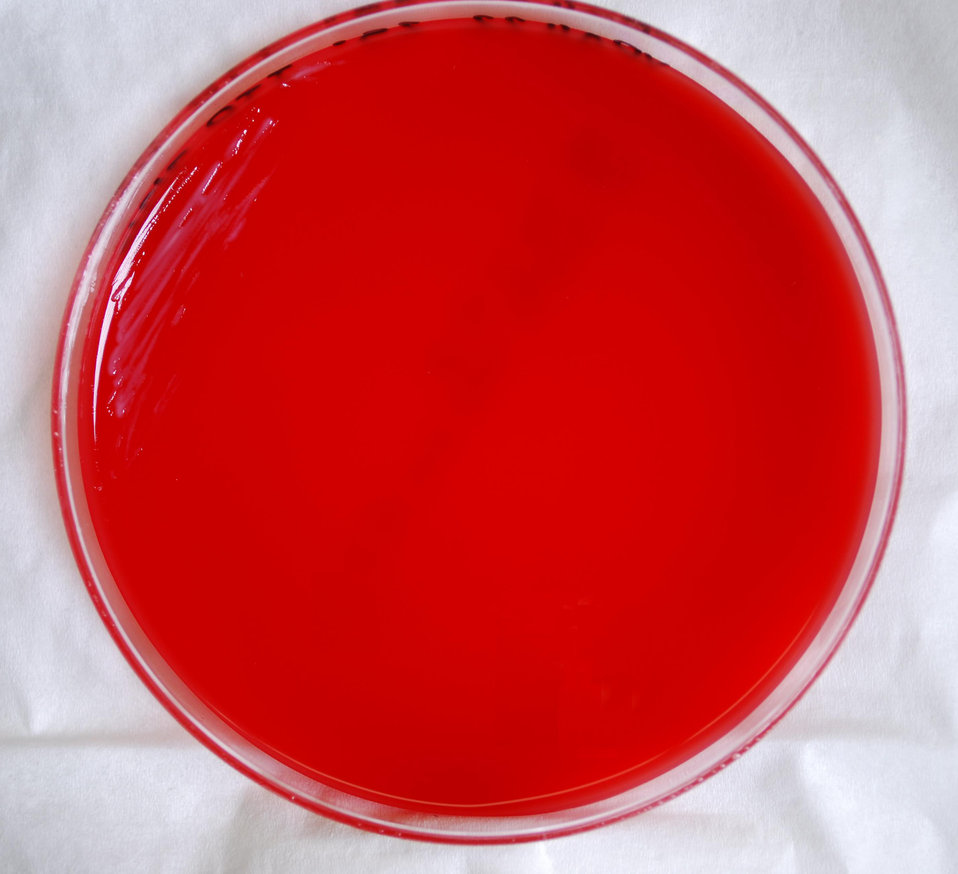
This photograph depicts the colonial morphology displayed by Gram-negative Yersinia pestis bacteria, which was grown on a medium of sheep's blood agar (SBA), for a 24 hour time period, at a temperature of 25�C. See PHIL 12212 for a closer view of these colonies.